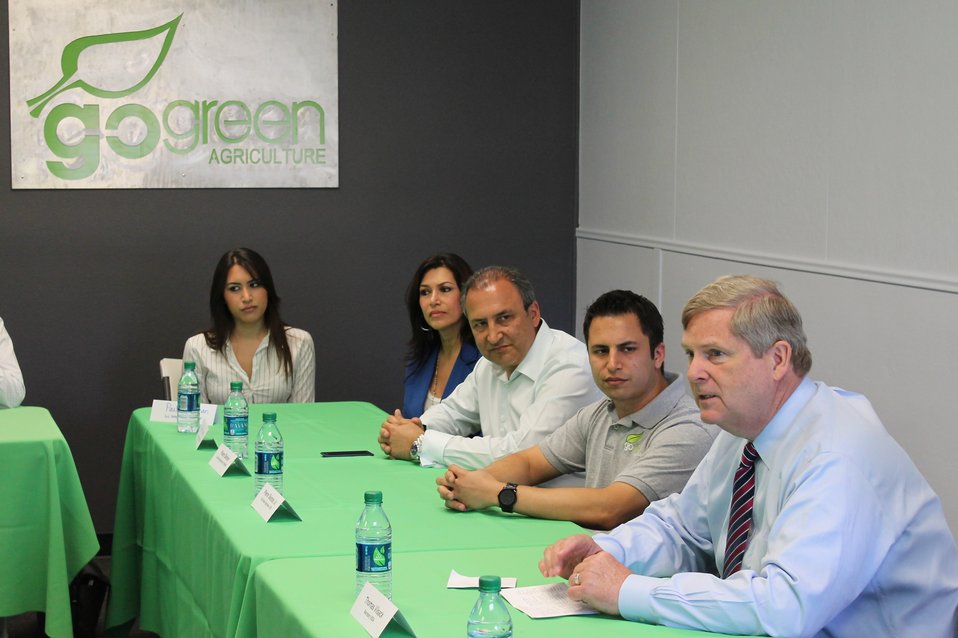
(R to L) Agriculture Secretary Tom Vilsack, GoGreen Agriculture Chief Executive Officer Pierre Suleiman, and organic producers have a roundtable discussion in Encinitas, CA on Apr. 17, 2013. GoGreen Agriculture is a family owned and operated hydroponics organic producer of lettuce, kale and spinach. GoGreen builds mini-farms in or near large cities and sells the premium produce locally. This eliminates major transportation time and cost, improves freshness, reduces petroleum consumption, and provides local jobs.